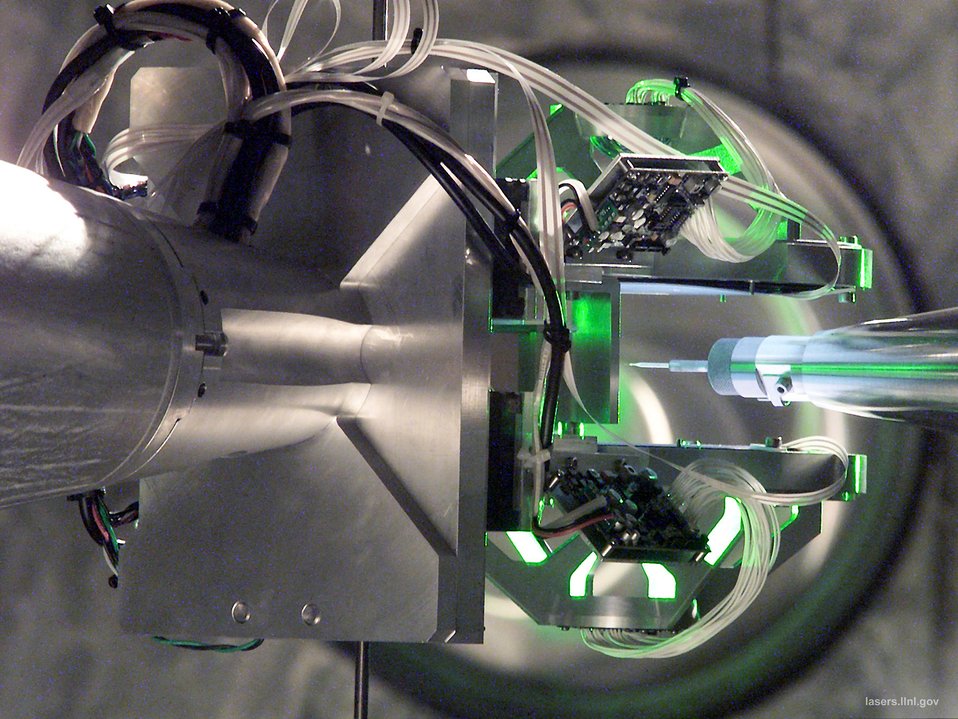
THE TARGET POSITIONER AND TARGET ALIGNMENT SYSTEM PRECISELY LOCATE A TARGET IN THE NIF TARGET CHAMBER. THE TARGET IS POSITIONED WITH AN ACCURACY OF LESS THAN THE THICKNESS OF A HUMAN HAIR.

The National Ignition Facility at LLNL enables key programs and technologies that support DOE's National Nuclear Security Administration Defense Programs and LLNL missions, ensuring that the national's weapons remain safe, secure and reliable. NIF, one of the cornerstones of DOE's stockpile stewardship program, will integrate the inertial confinement fusion program into the overall stockpile stewardship program and foster the development of associated laser technologies.